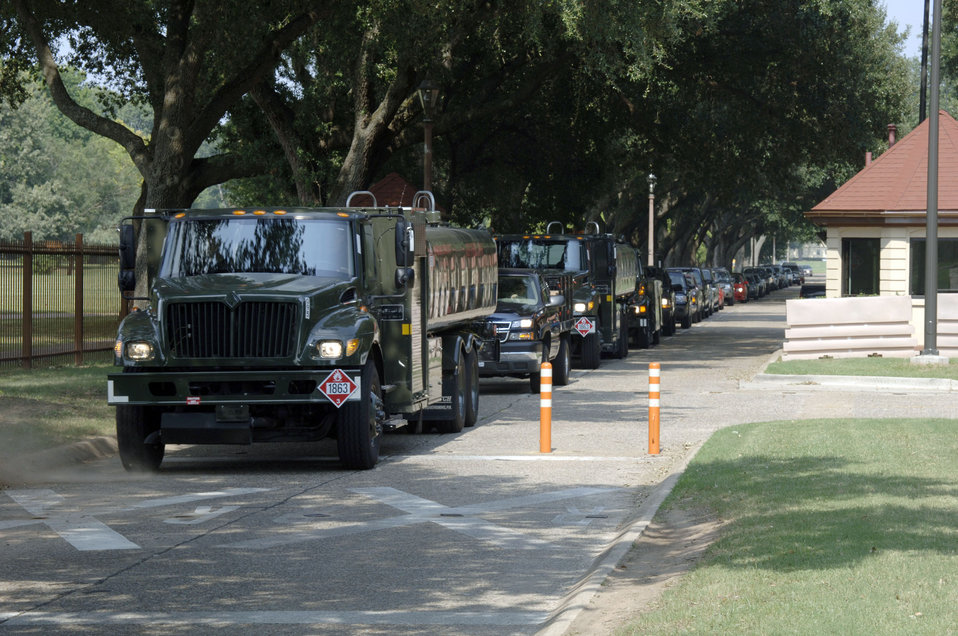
Fuel convoy

BARKSDALE AIR FORCE BASE, La. -- Fuel trucks and support vehicles assigned to the 2d Logistics Readiness Squadron here depart the base headed for hurricane Katrina relief efforts in the New Orleans area. The fuel trucks will refuel helicopters performing rescue operations.